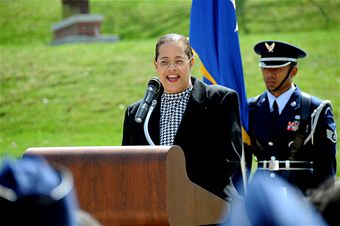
Tull Road dedication

Dr. Janet Tull, the daughter of the late Lt. Col. Harrison